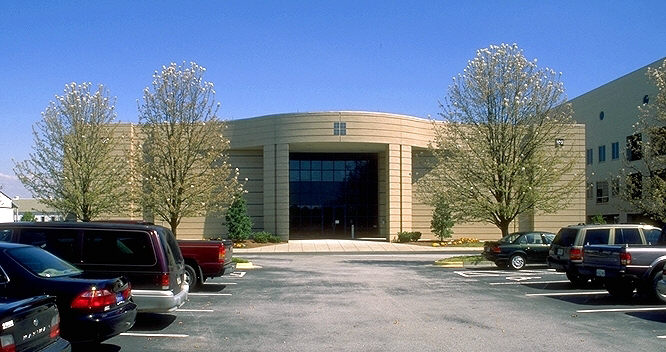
Captured in March, 1999, this image depicts Building 102, located on the Centers for Disease Control's (CDC) Chamblee Campus, in metropolitan Atlanta, Georgia.